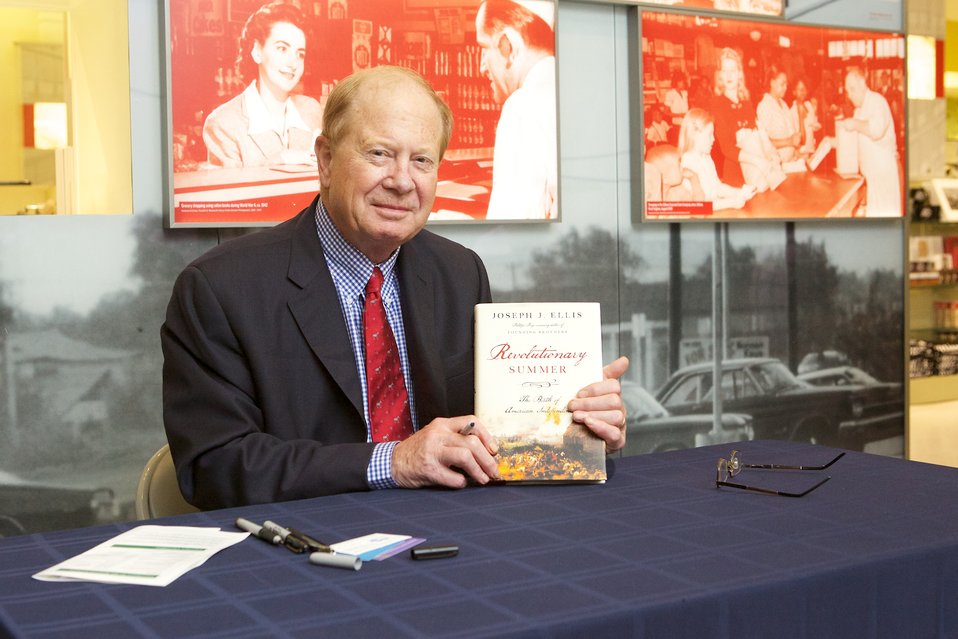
Revolutionary Summer; Joseph Ellis, author, autographs copies of his book following his lecture